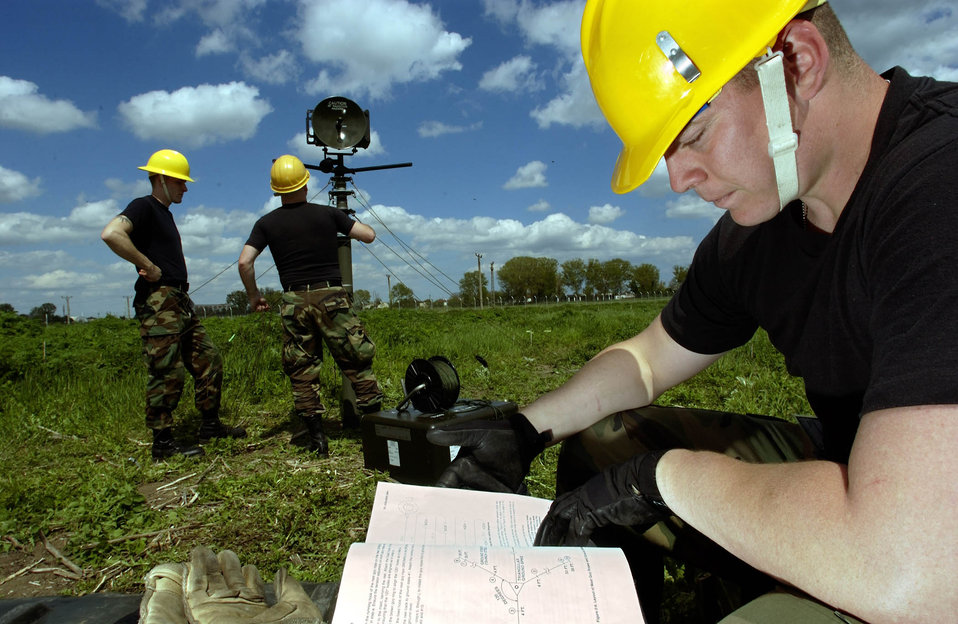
Airmen prepare Romanian base for exercise

MIHAIL KOGALNICEANU AIRFIELD, Romania -- Senior Airman Lawrence Tobin reviews the technical order for building a 50-foot mast as Senior Airmen Charles Lyddon (left) and Neal Bridges prepare a modulator on the mast here for exercise Combined Endeavor 2005. The exercise will test the communications systems among 1,200 servicemembers and civilians from more than 43 countries. The Airmen are assigned to the 1st Combat Communications Squadron at Ramstein Air Base, Germany.